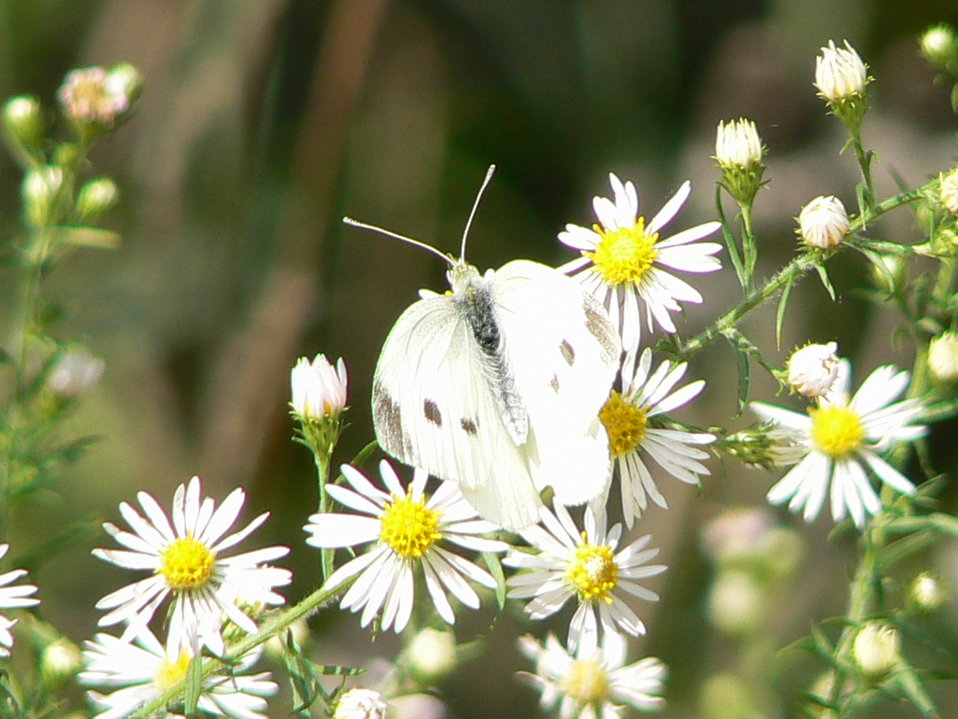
Cabbage butterfly at Cape May National Wildlife Refuge.